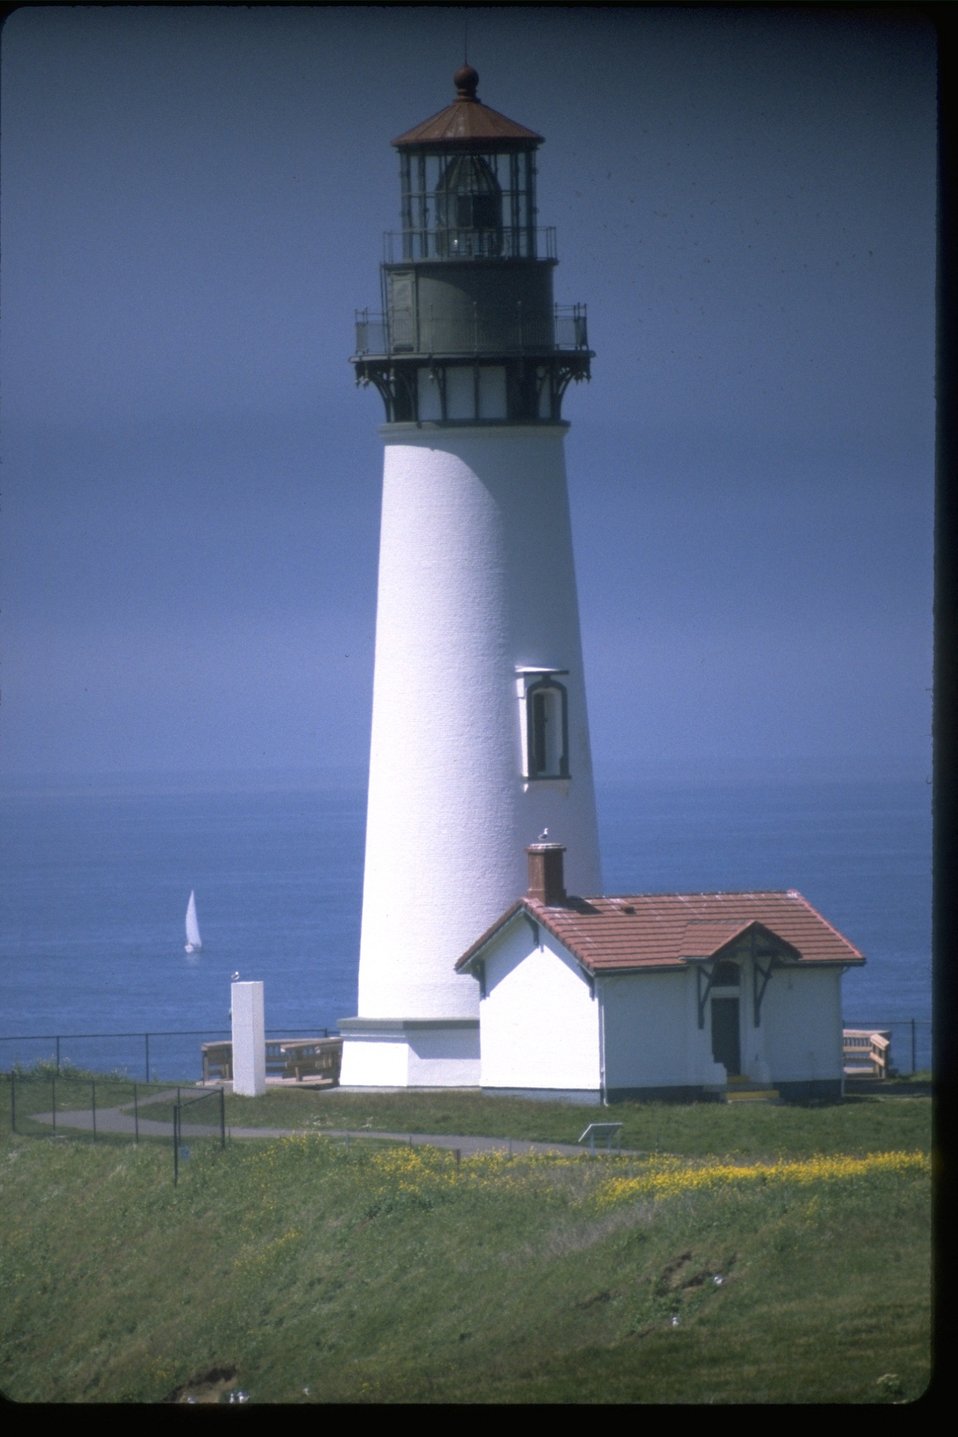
Vertical shot of Yaquina Head lighthouse with a sailboat off shore.